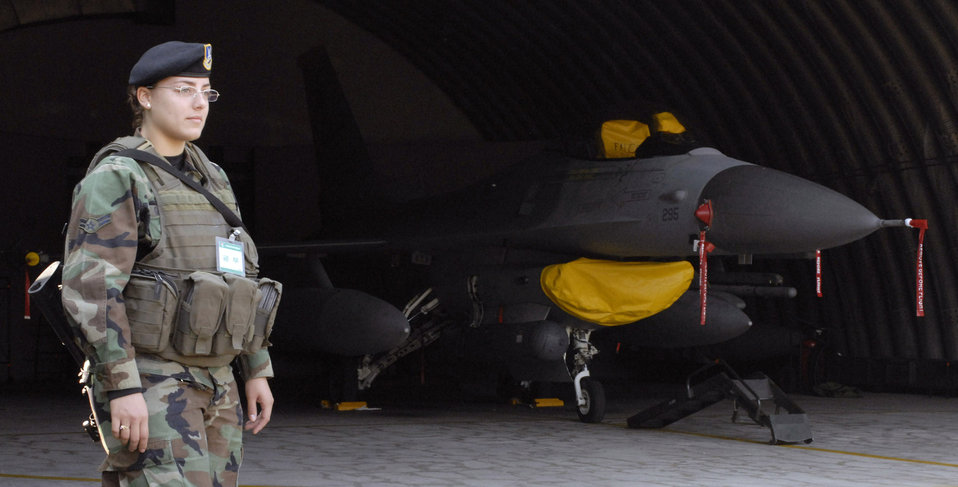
Buddy Wing Program teams up U.S., Korean Airmen

Airman 1st Class Ivelisse Gonzalez provides security for an F-16 Fighting Falcon Oct. 24 during the Buddy Wing program held at Jungwon Air Base, South Korea. Airman Gonzalez is assigned to the 8th Security Forces Squadron at Kunsan AB, South Korea. The Buddy Wing program is a way for U.S. Air Force and South Korea air force to develop teamwork, exchange ideas and improve war time tactics.